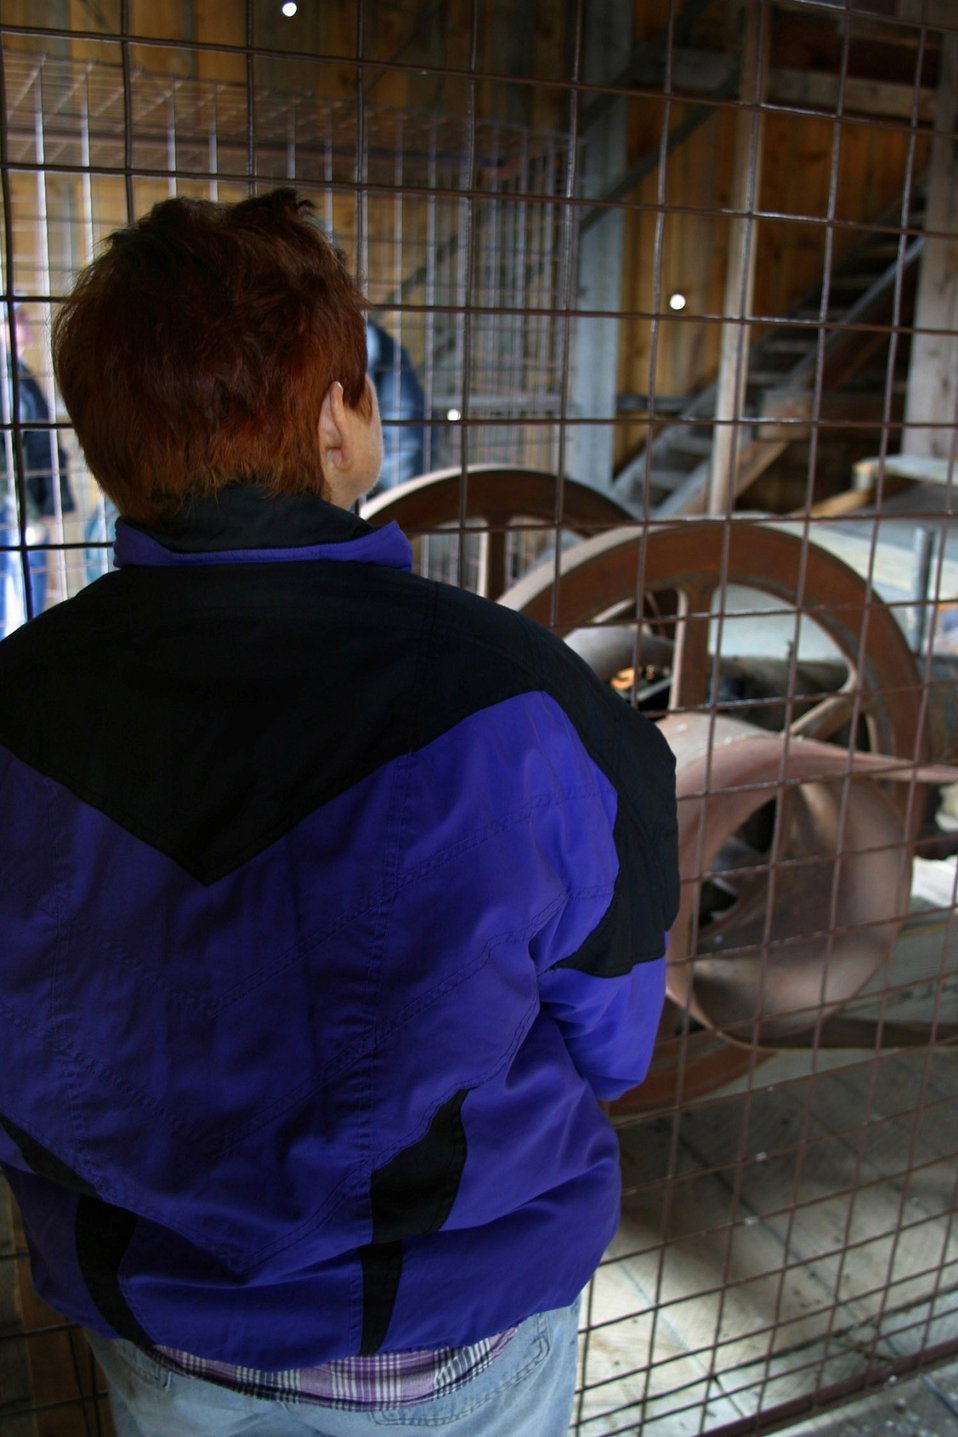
A replica of the Rabbit Mine 1926 stamp mill near Greenhorn in the Blue Mountains of eastern Oregon. It is used to interpret the importance of mining in western history, and the relationship of gold mining to the westward migration story.